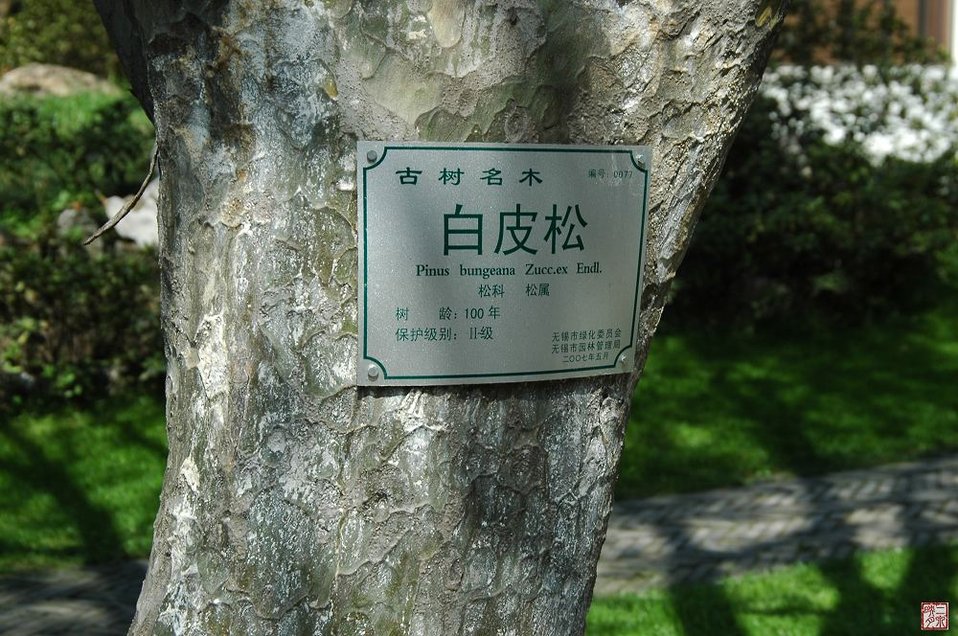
Uploaded by request of Ju Chen

One hundred years old tree. This old trees is protected by the Wuxi government.